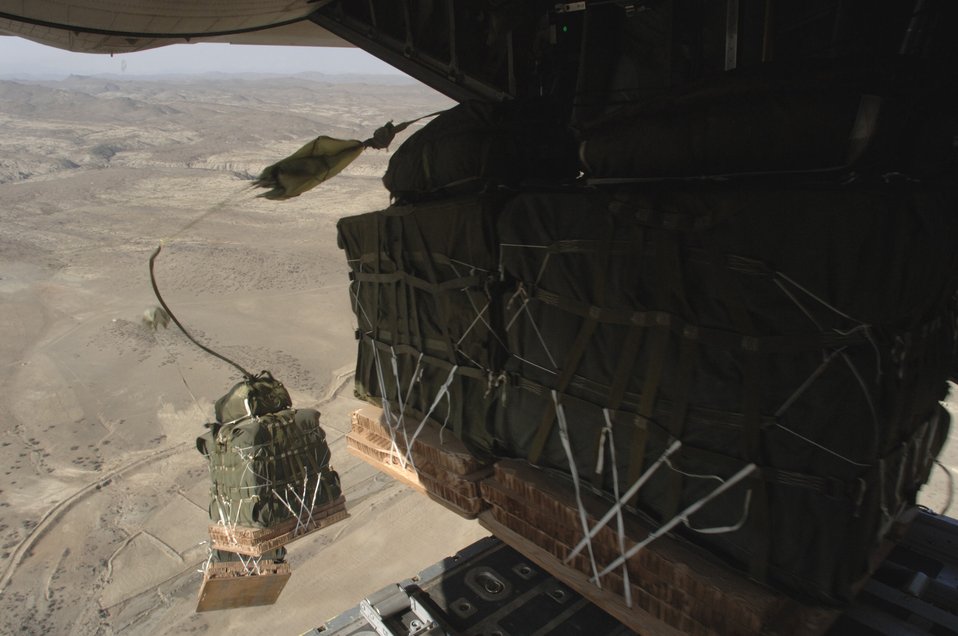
Special delivery

Pallets roll out of a C-130 Hercules near the Pakistan border Thursday, March 9, 2006. The airdrops re-supply forward operating locations surrounded by Afghan mountain ranges. The aircraft and most of its crew are from the Oklahoma Air National Guard's 185th Airlift Squadron and are deployed to the 774th Expeditionary Airlift Squadron at Bagram Air Base, Afghanistan.